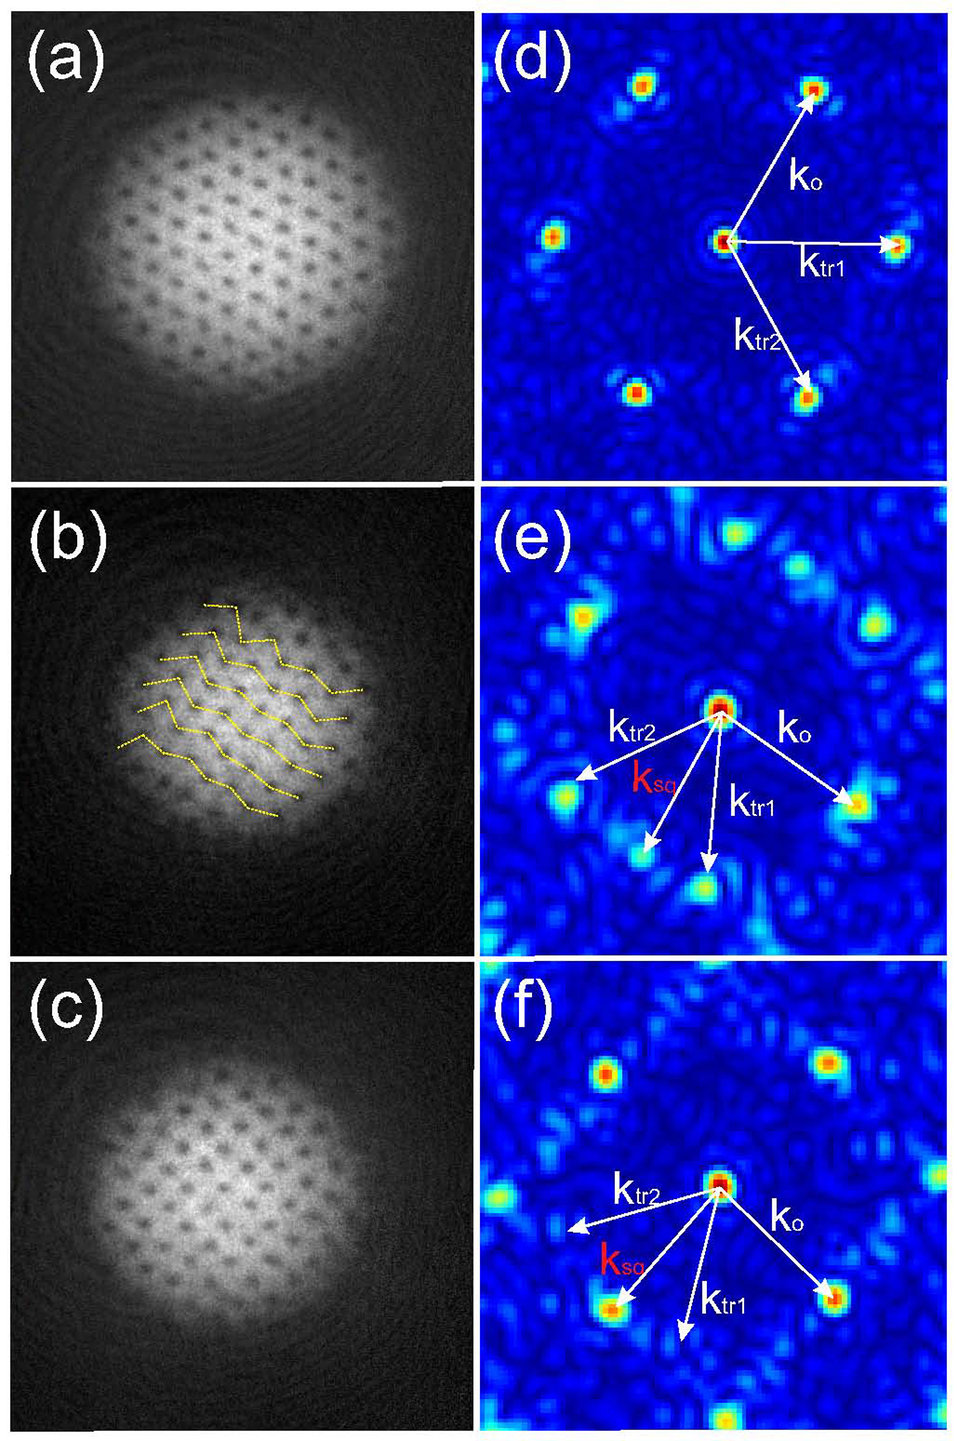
'Vortex Lattices' May Help Explain Material Defects

This set of JILA images shows a rotating Bose-Einstein condensate (BEC) 'pinned' to a rotating lattice created with lasers as the shape of the combined 'vortex lattice' evolves from triangular (top) to square (bottom). The images on the left show the BEC vortex lattice at low, medium, and high pinning strengths, or optical intensity levels (top to bottom). The corresponding images on the right are computer processed to reveal the structural relationship between the BEC vortex and optical lattice, with red indicating the symmetry of the physical structures (hexagonal/triangular or square).

Credit: Cornell group/JILA